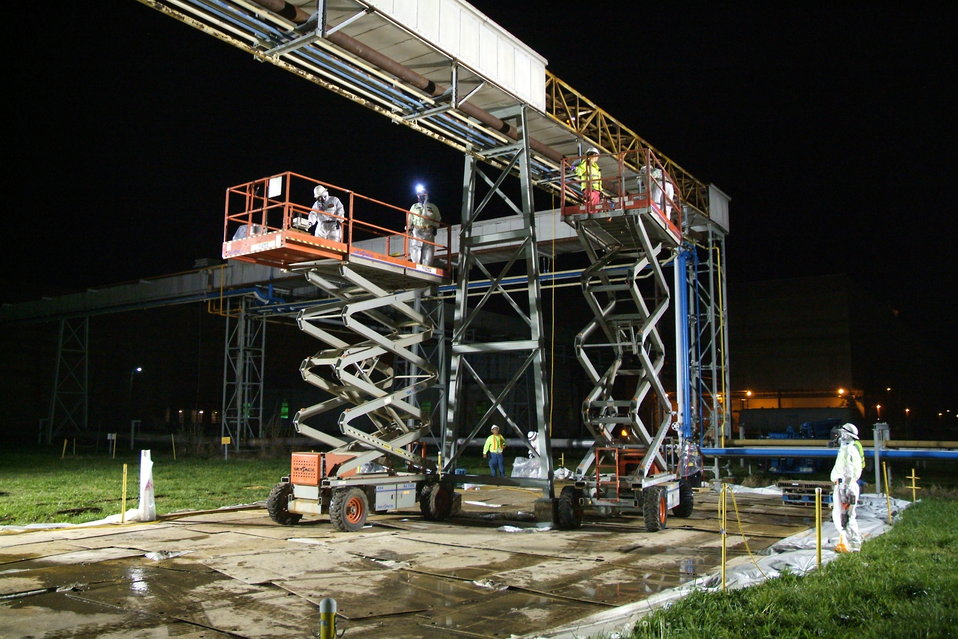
Crane Work at the Paducah Site

Second-shift Recovery Act workers at the Paducah Site use scissor lifts and metal saws to remove the outer cover of old uranium hexafluoride process tie lines linking C-410 with other parts of the Paducah Gaseous Diffusion Plant.